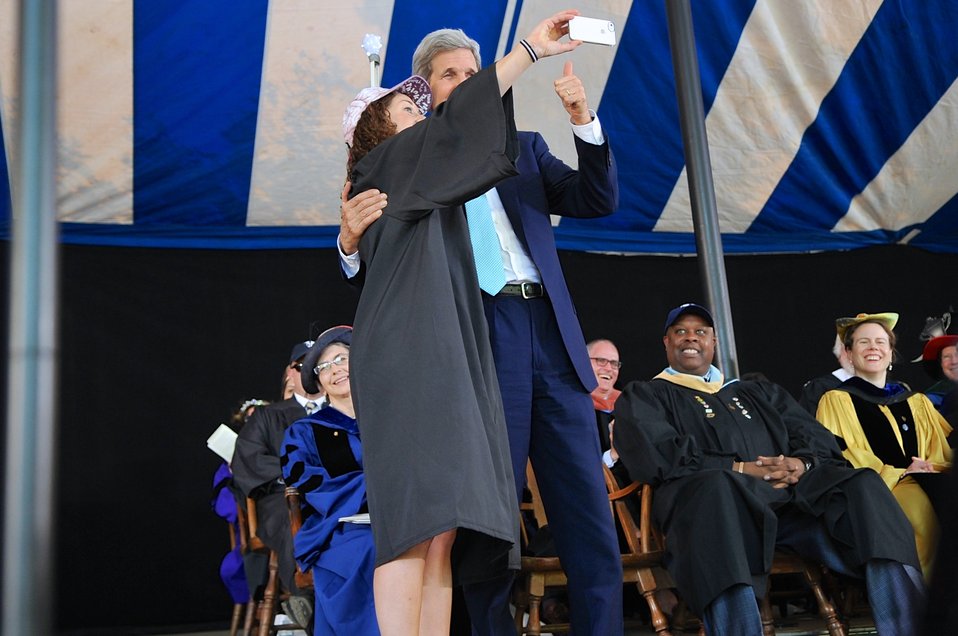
Secretary Kerry Poses for 'Selfie' With Graduating Yale University Senior

U.S. Secretary of State John Kerry poses for a 'selfie' photo with a senior Yale University graduate who delivered a humorous speech after the Secretary himself addressed her fellow seniors during Class Day ceremonies in New Haven, Connecticut, on May 18, 2014.